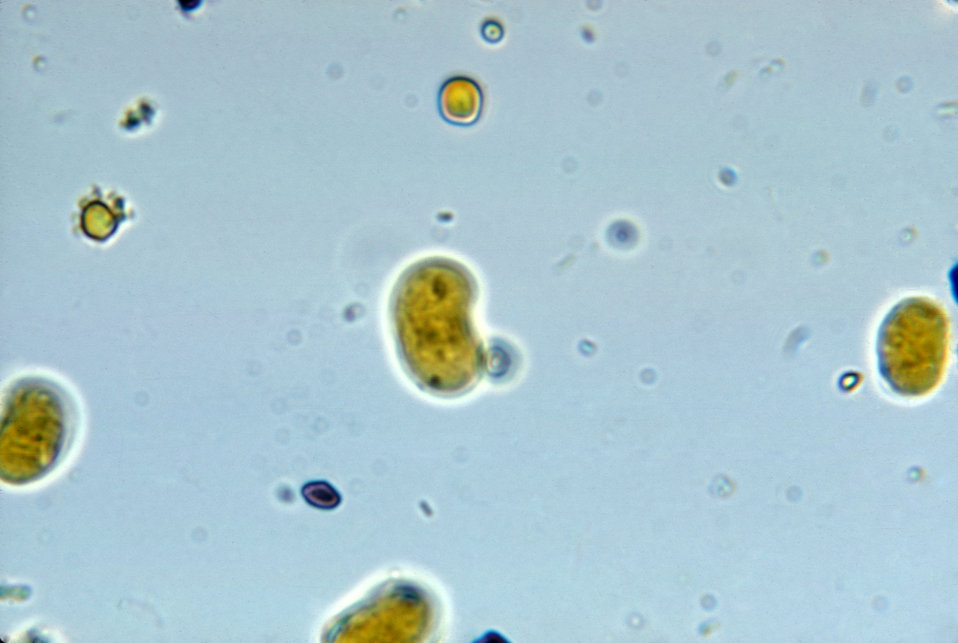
Endolimax nana cyst. Iodine stain.